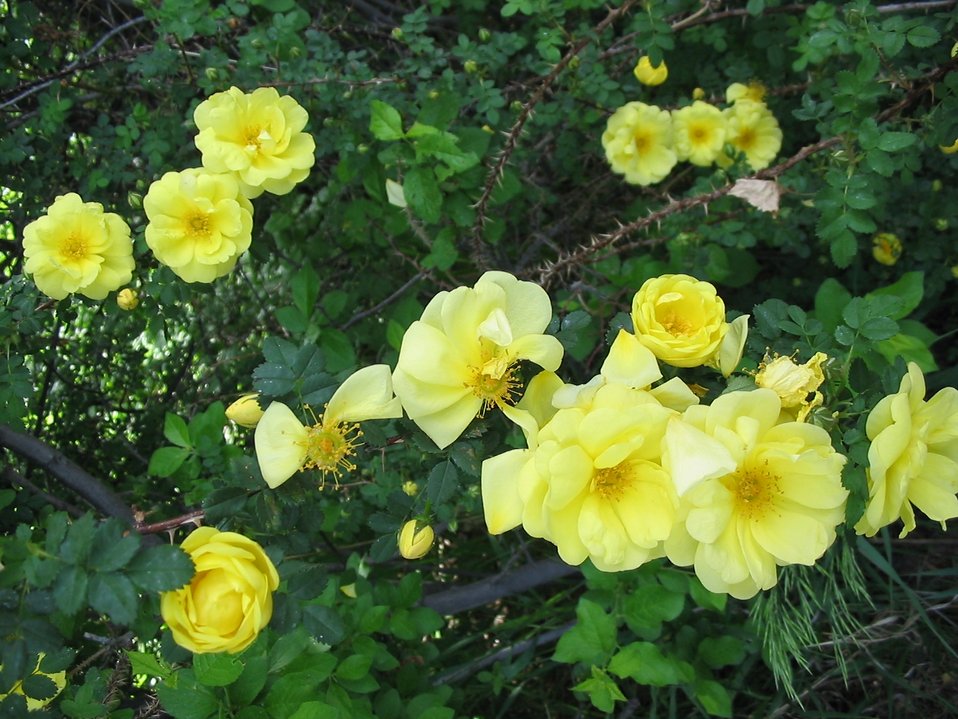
Wild Roses